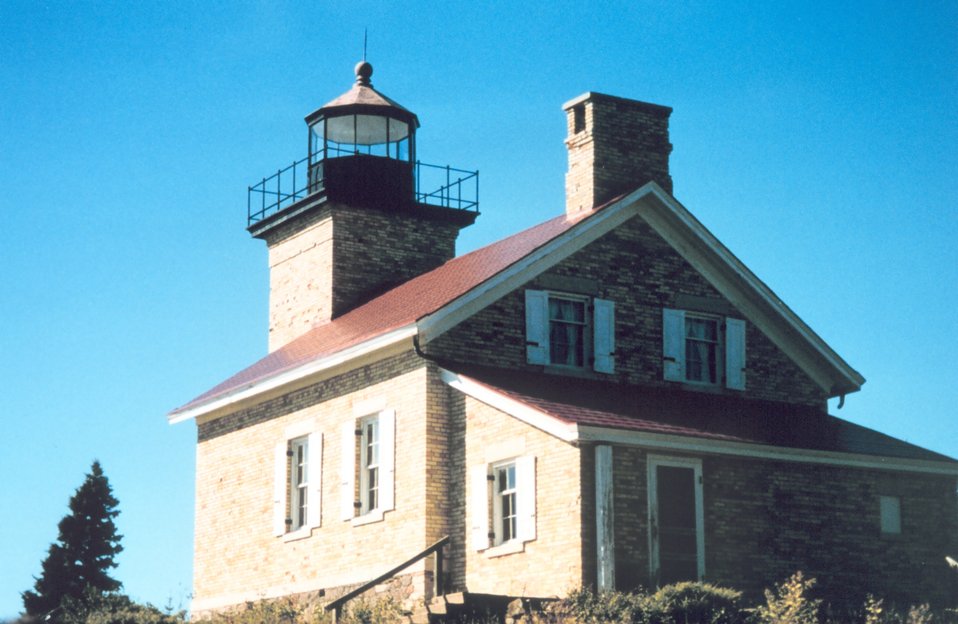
Big Bay Lighthouse